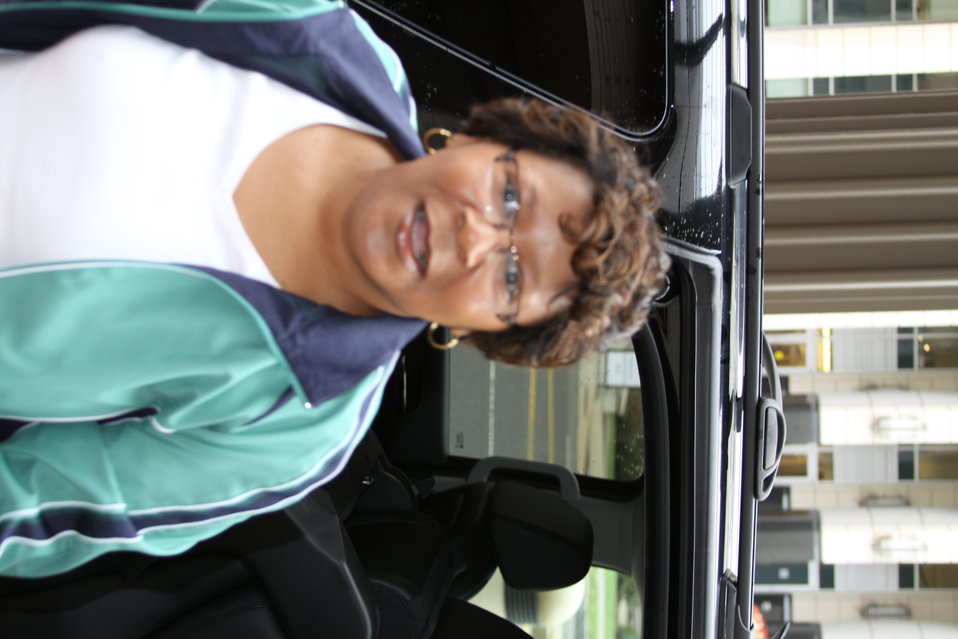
FCC Official Vehicle Tour